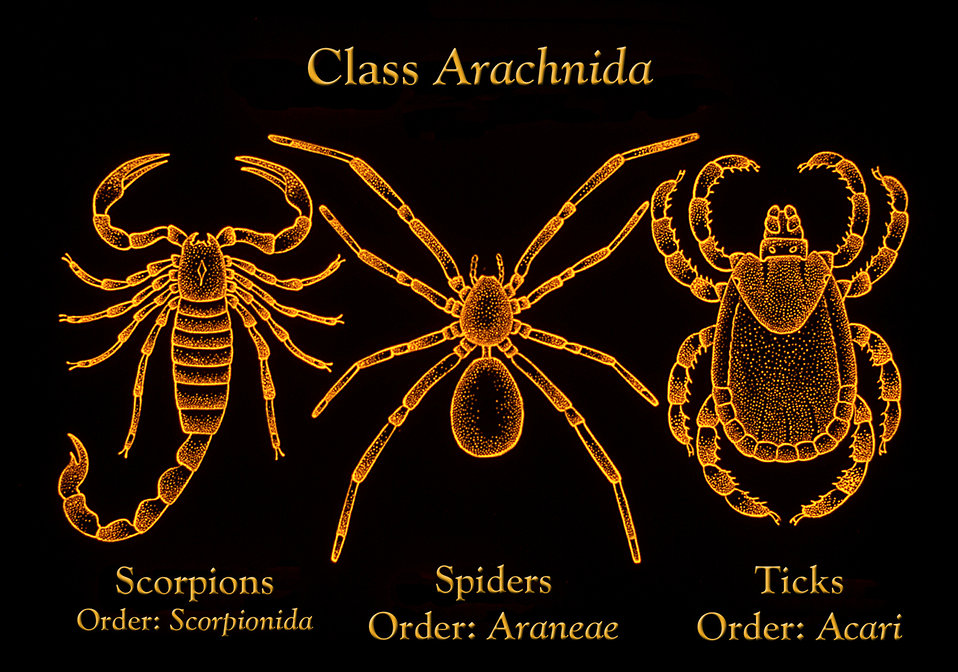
This illustration depicts morphologic differences found in scorpions, ticks, and spiders, all members of the Class Arachnida.